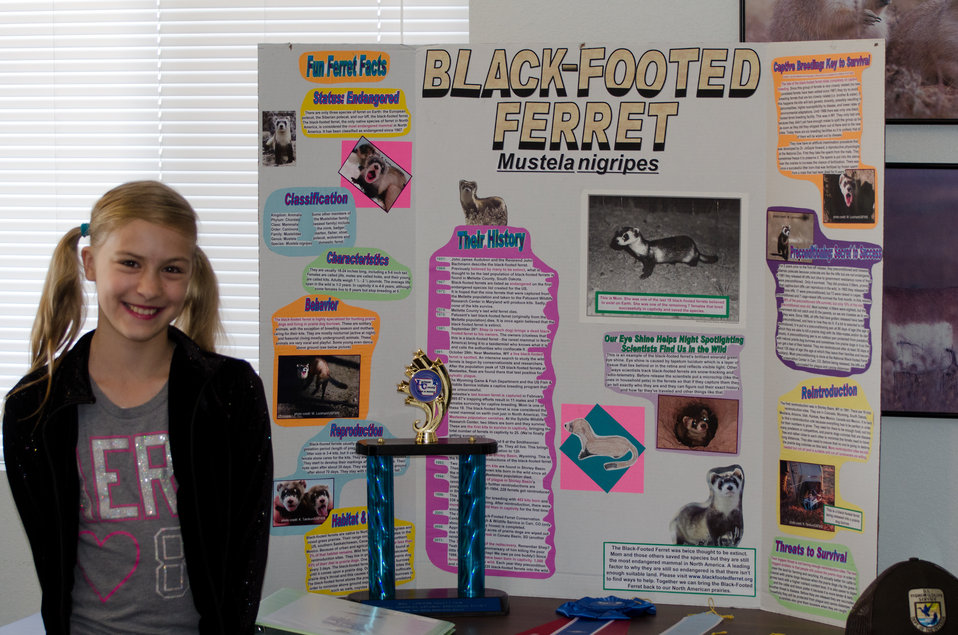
Hannah Cherkauer & Project

Hannah poses with her project at the National Black-footed Ferret Center during her visit.